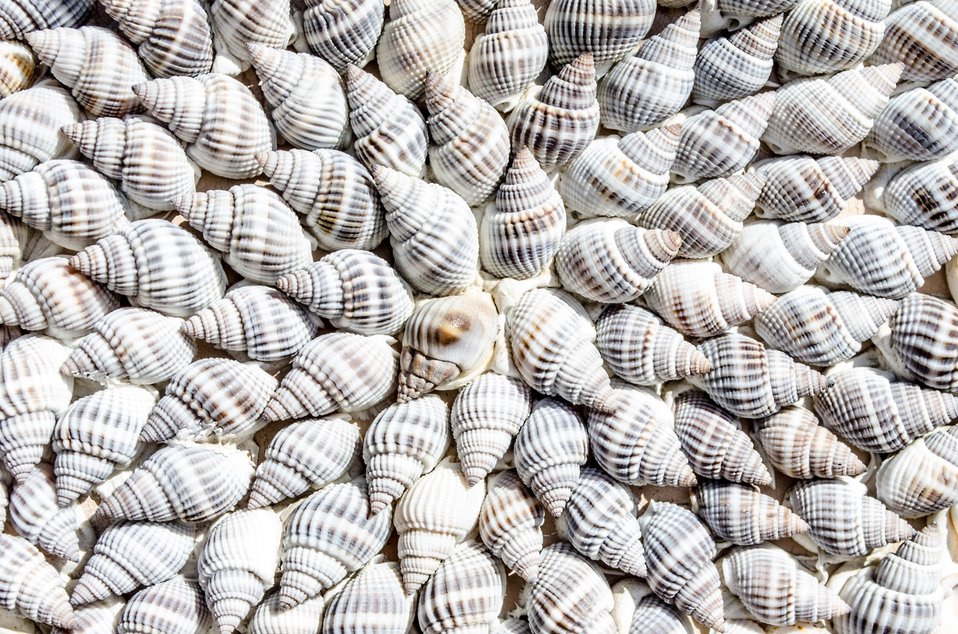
Seashell background.